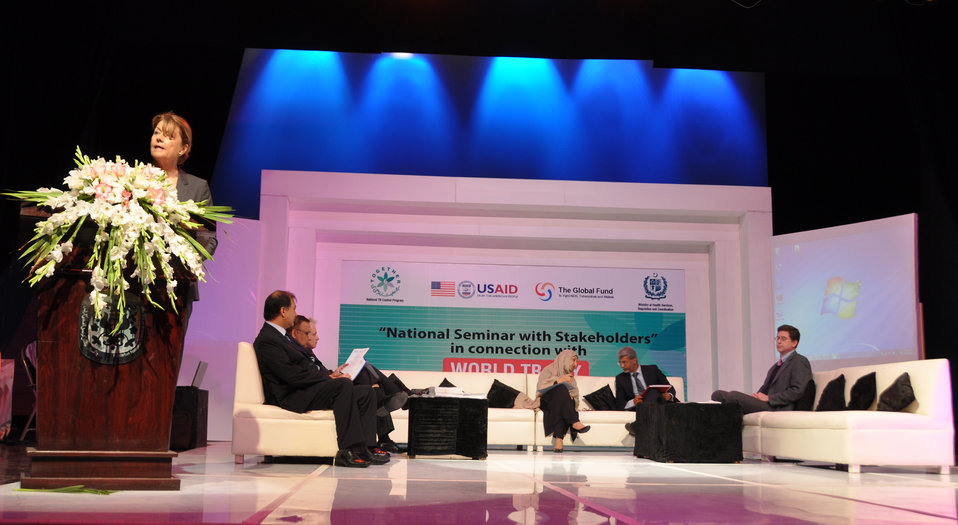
Nancy Estes, Acting Mission Director USAID, delivers remarks during the World TB Day event held by the Ministry of National Health Services.